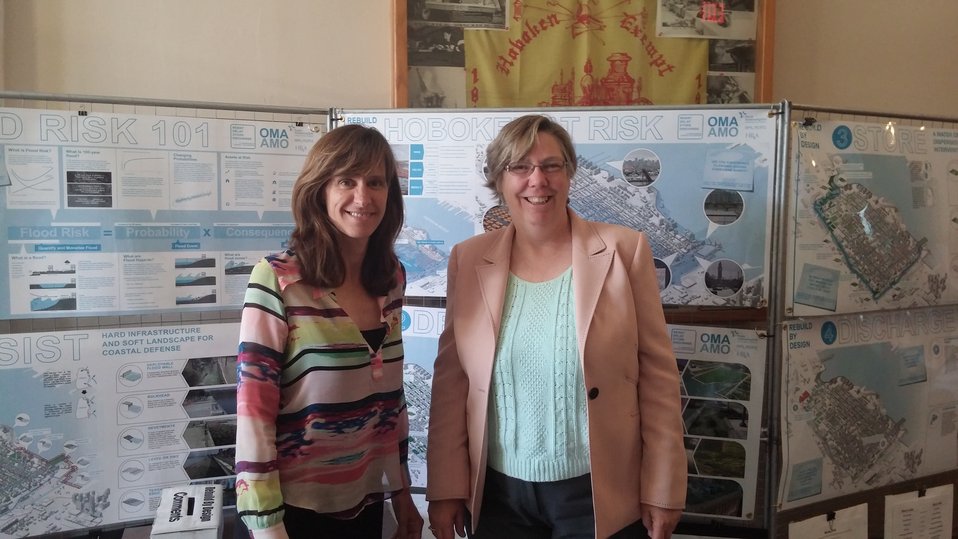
EPA Region 2 Administrator and Hoboken Mayor

Our Region 2 Administrator Judith Enck met with Mayor Dawn Zimmer, of Hoboken, NJ, to discuss that city's submission to the Hurricane Sandy Rebuilding Task Force and the U.S. Department of Housing and Urban Development's Rebuild by Design initiative.